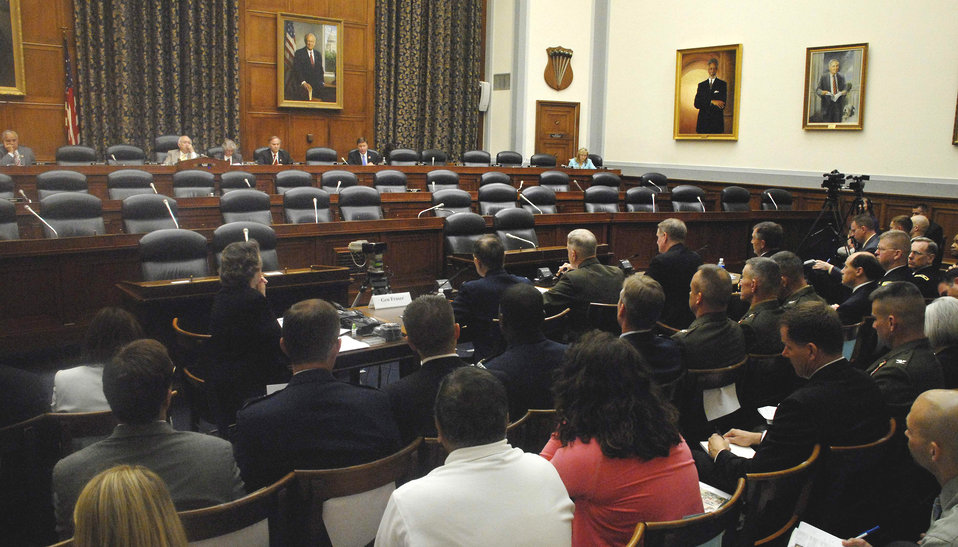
Services address readiness subcommittee

Vice Chief of Staff Gen. William M. Fraser III and his counterparts from the Army, Navy and Marines address the House Armed Services Committee's Subcommittee on Readiness May 20 on fiscal 2010 Operation and Maintenance Budget requests. General Fraser also discussed how 18 years of continuous combat deployments have strained Air Force readiness and how current fiscal realities required difficult decisions to balance the force.